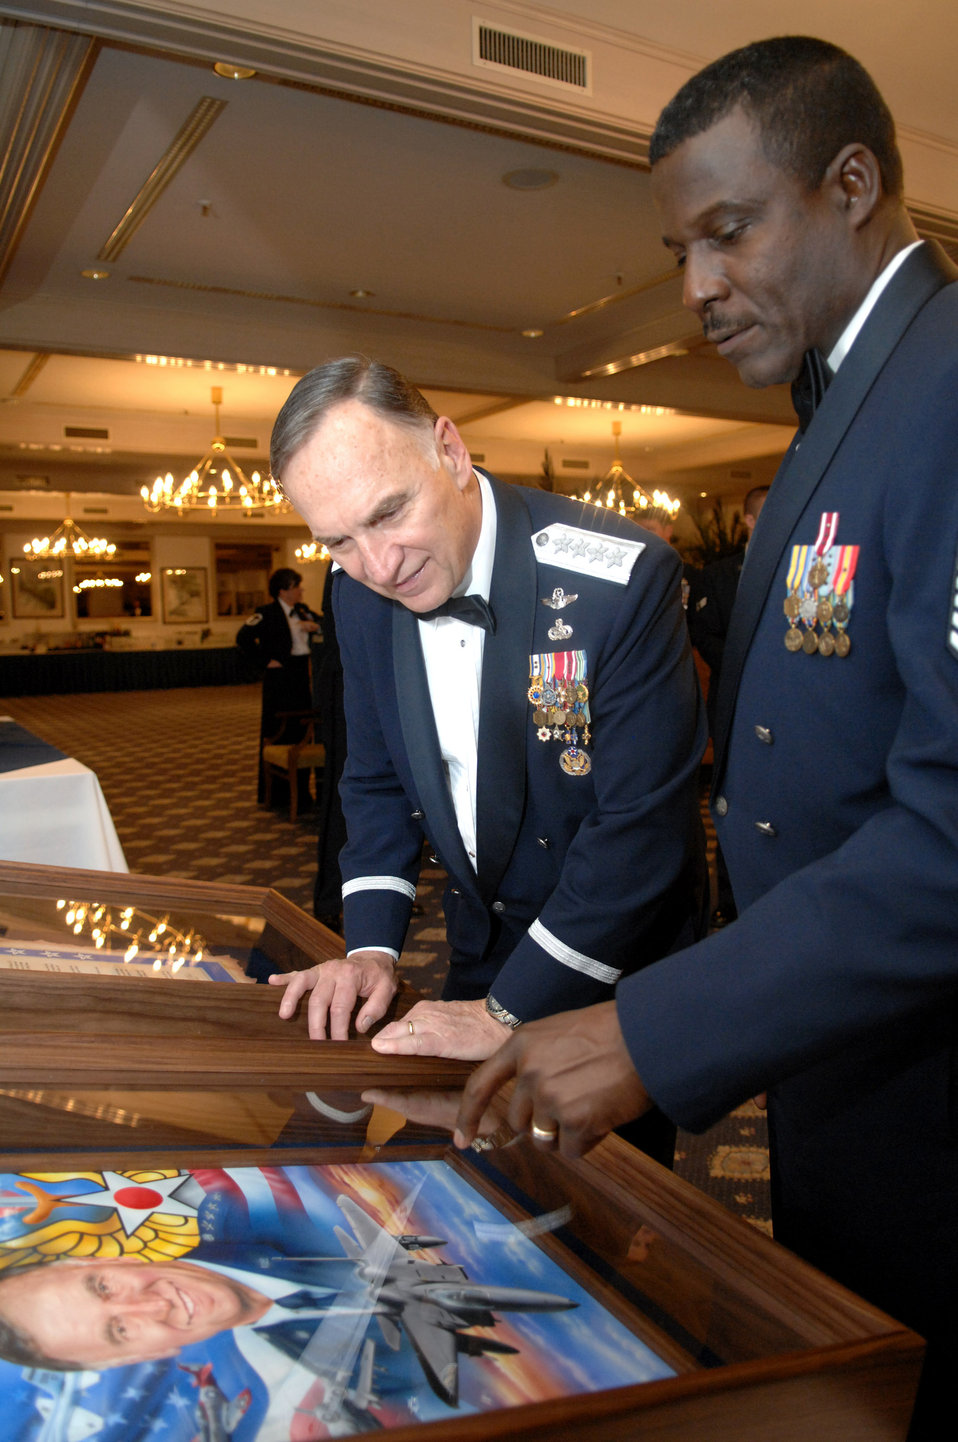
Gen. Hobbins honored with Order of the Sword

Gen. William T. Hobbins, U.S. Air Forces in Europe commander, admires artwork he received during a USAFE Order of the Sword induction ceremony in his honor. USAFE's top enlisted Airman, Chief Master Sgt. Gary G. Coleman, explains some of the detailing in the work. The Order of the Sword induction is the highest honor the enlisted corps can bestow on an individual.